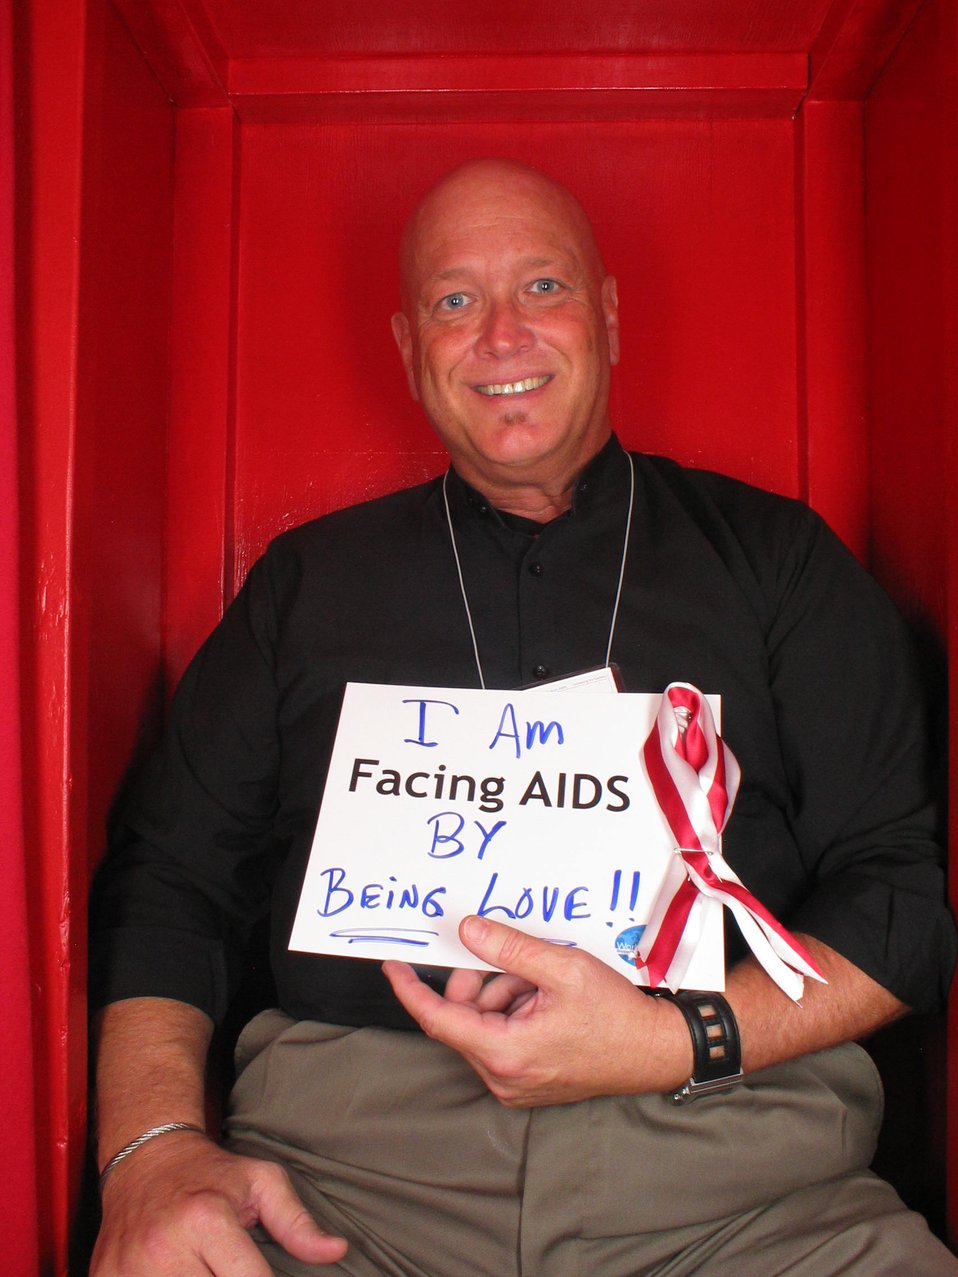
I am Facing AIDS by being love!!!